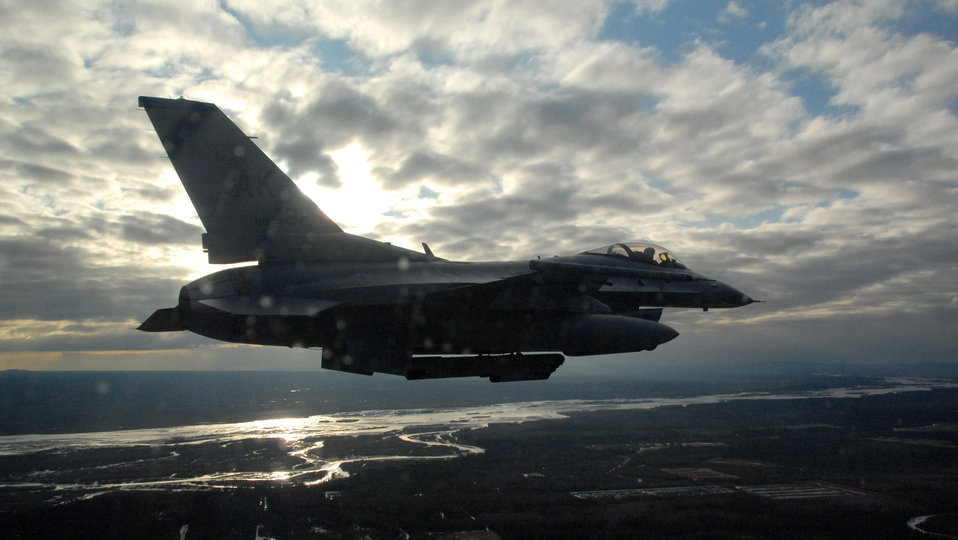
Eielson pilots get aggressive aircraft during Red Flag-Alaska

Capt. Jeremy Wimer flies an F-16 Fighting Falcon as it enters final approach after returning from a Red Flag-Alaska 07-1 April 13 mission over Eielson Air Force Base, Alaska. Red Flag-Alaska is a Pacific Air Forces-directed field training exercise flown under simulated air combat conditions. Captain Wimer is a pilot from the 18th Fighter Squadron from Eielson AFB.